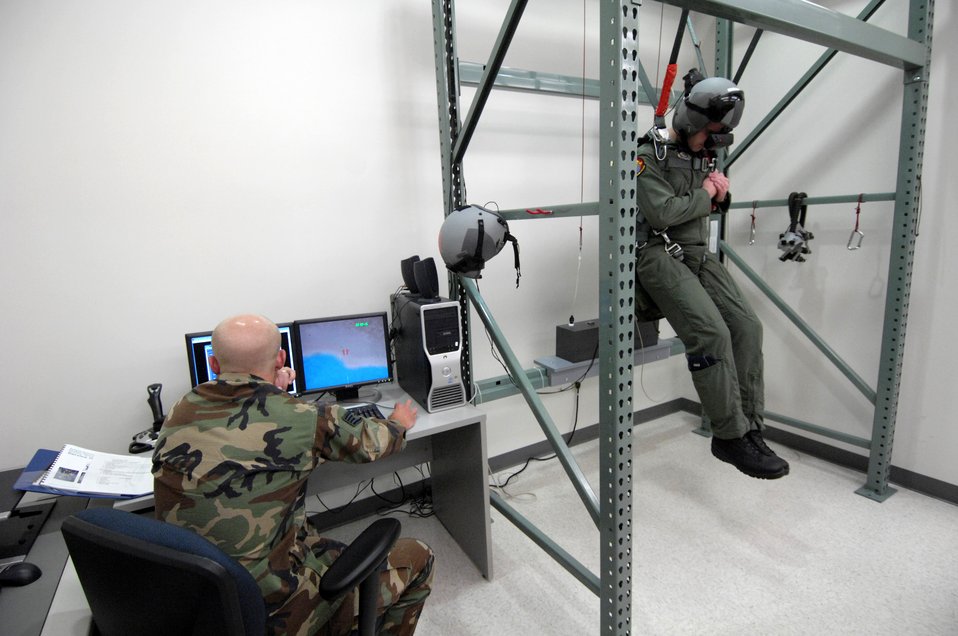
Virtual technology enhances training for aircrews

Staff Sgt. Matt Magnussen starts a virtual parachute training simulation while 1st Lt. John Brantuk II gets into his freefall position at Hickam Air Force Base, Hawaii, on Oct. 4. Sergeant Magnussen is a life support instructor with the 15th Operations Support Squadron. Lieutenant Brantuk is a pilot with the 535th Airlift Squadron